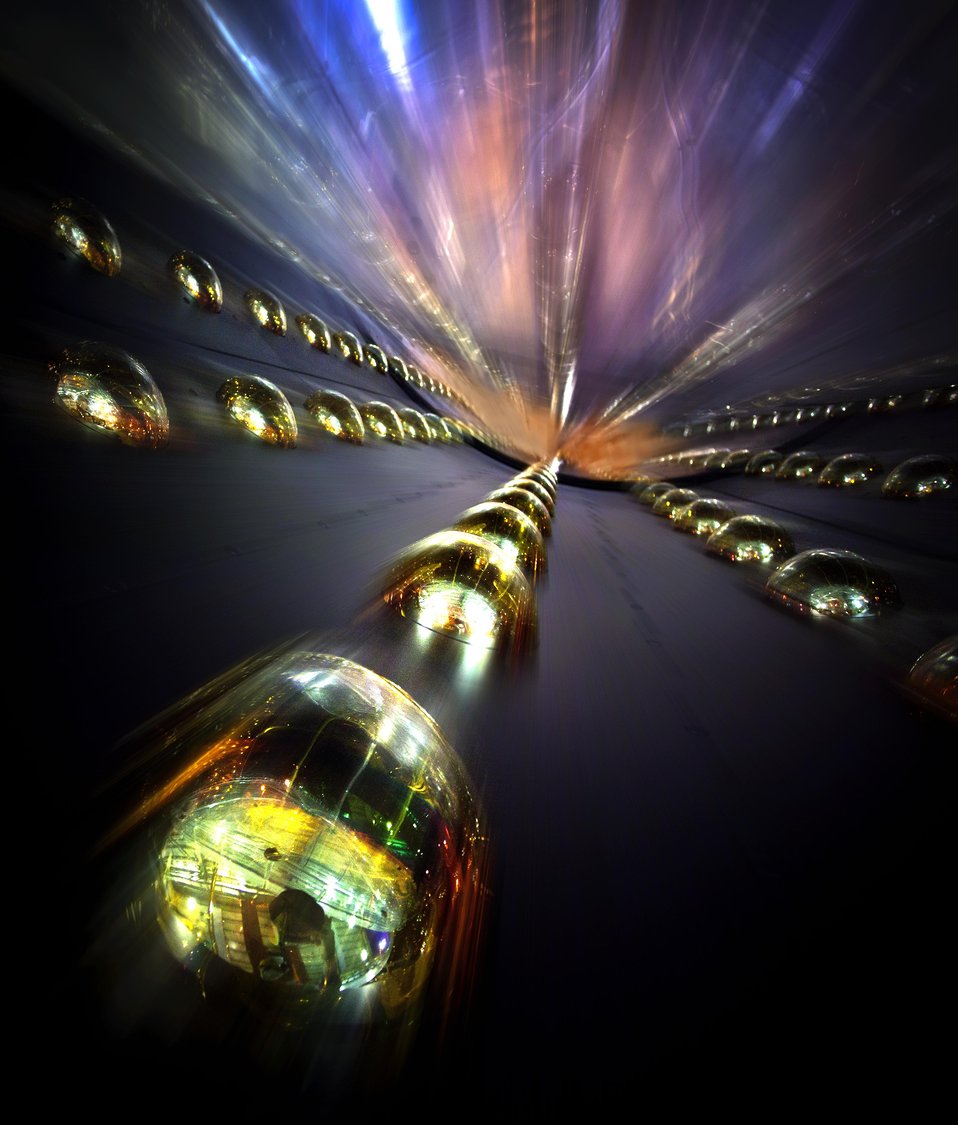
The Daya Bay Reactor Neutrino Experiment, led by the U.S. and China initiated by Lawrence Berkeley National Laboratory, is the most sensitive reactor experiment in the world.

The results promise new insight into why enough ordinary matter survived after the big bang to form everything visible in the universe. Shown are the photomultiplier tubes that catch the faint trace of antineutrino reactions.